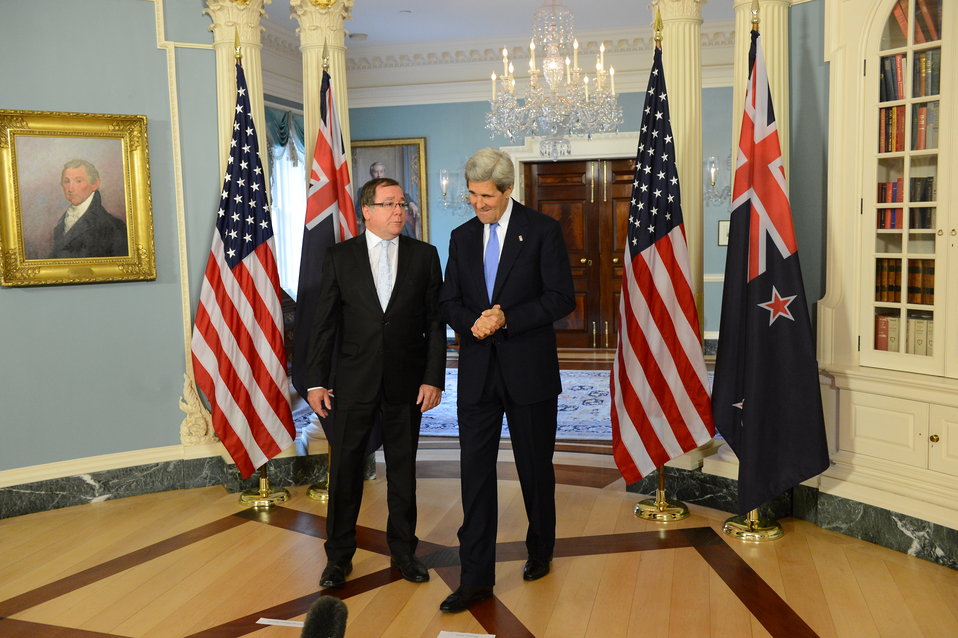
Secretary Kerry Meets With New Zealand Foreign Minister McCully

U.S. Secretary of State John Kerry meets with New Zealand Foreign Minister Murray McCully at the U.S. Department of State in Washington, D.C., on May 20, 2013.